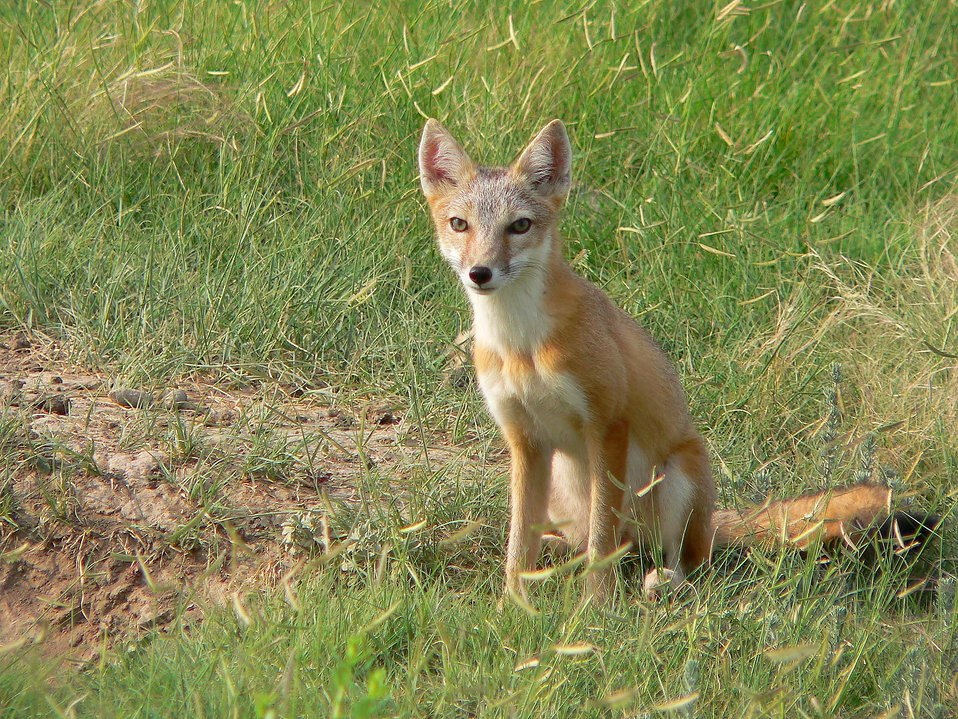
Living in a Prairie Dog Town

This Swift fox (Vulpes velox) doesn't mind living in town (a black-tailed prairie dog town), where the grocery store is never far. He prefers to do his shopping at night and just might bump into his neighbor, the black-footed ferret on this private land in western Kansas.

Credit: Tony Ifland / USFWS

Photo Contest Entry #51